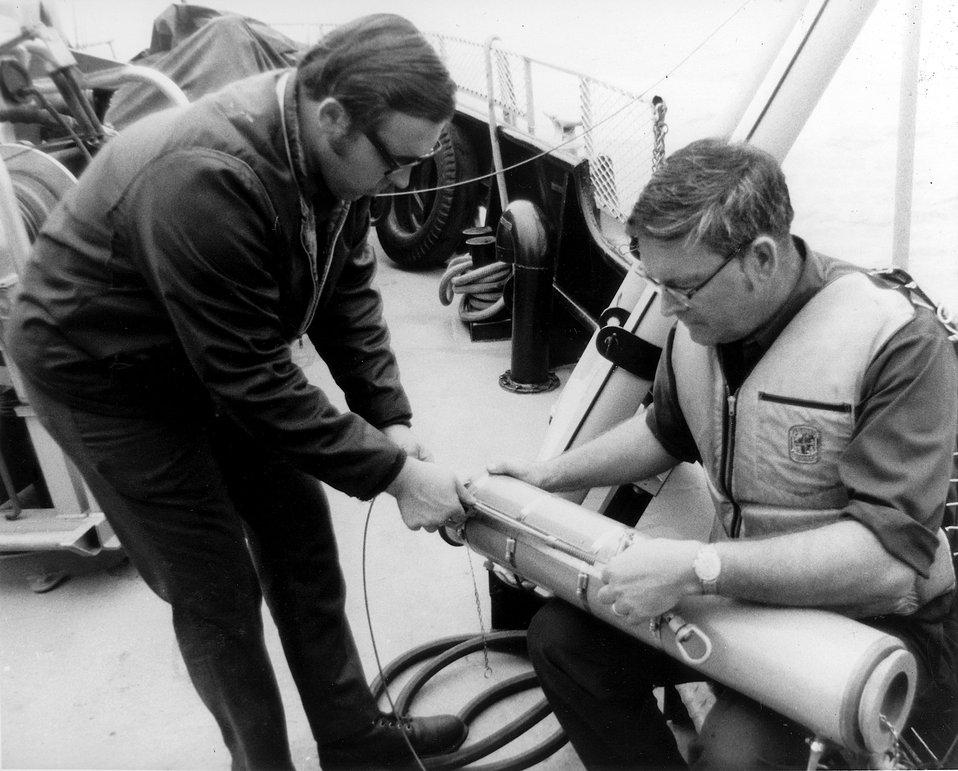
Researchers from the Center for Great Lakes Studies prepares a Van Dorn water sampler for an experimental run.
c.1972